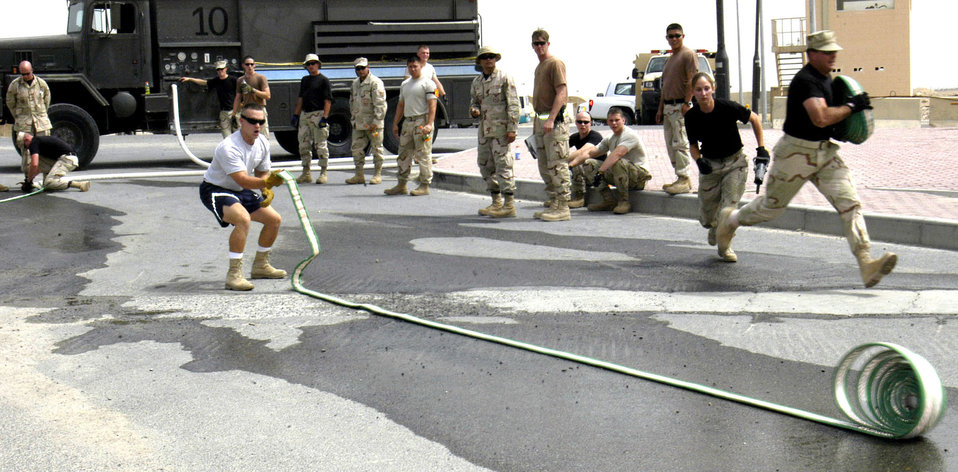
Firefighter Challenge

Staff Sgt. Shaun Lyle rolls out a hose during the Firefighter Challenge in Southwest Asia on Thursday, May 4, 2006. The event was hosted by the 386th Air Expeditionary Wing's fire and emergency services flight Sergeant Lyle is with the 386th Expeditionary Civil Engineer Squadron.